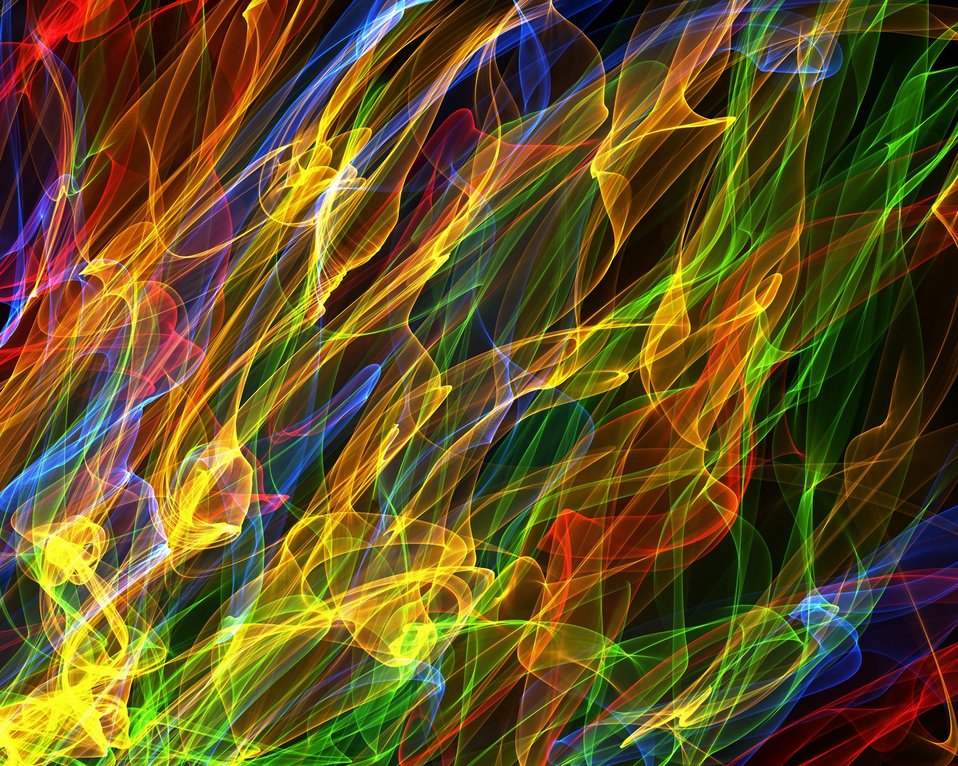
Colourful flame background

Colourful flames of fire designed on a black background..